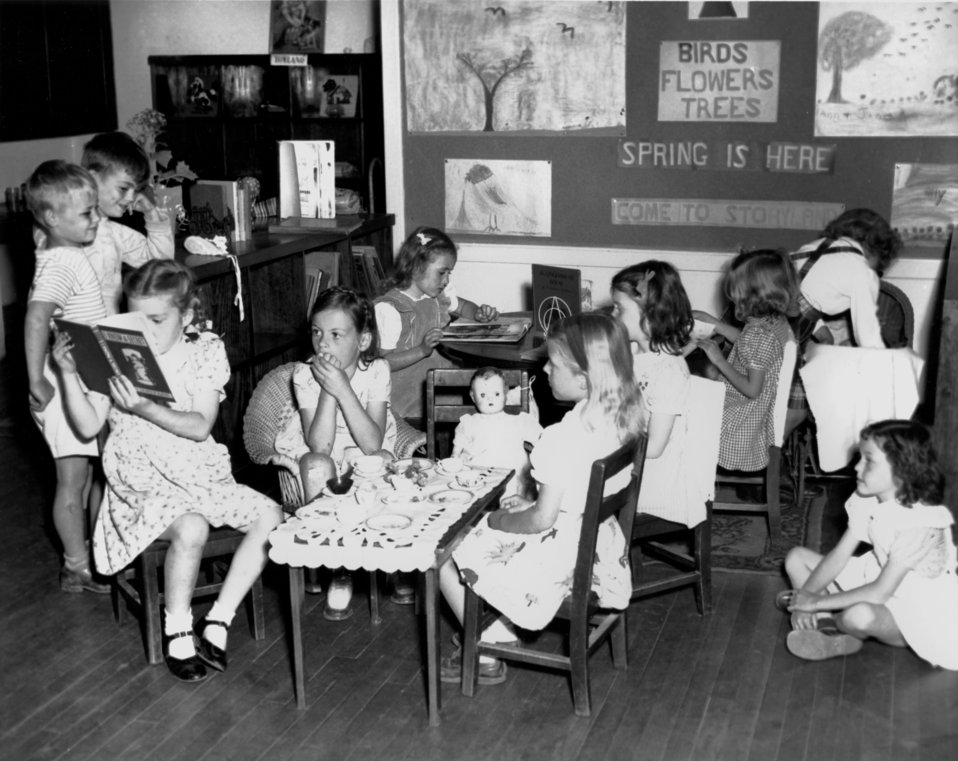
Pine Valley School Open House Childern Reading and Tea Party Oak Ridge 1945

Pro-454-3 DOE photo Ed Westcott 4-20-1945 Oak Ridge Tennessee